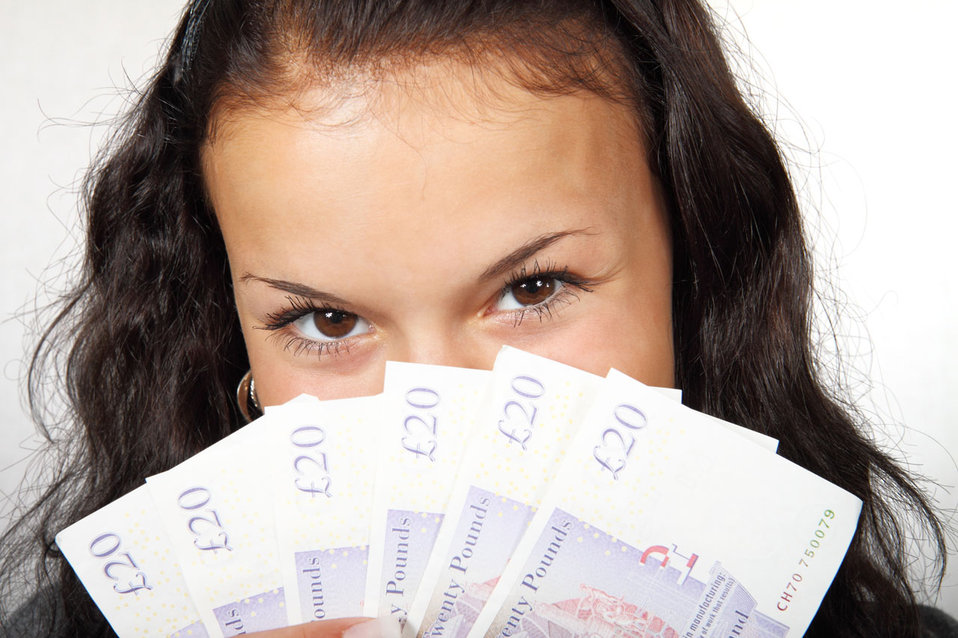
Woman holding money

Young woman holding british pounds.